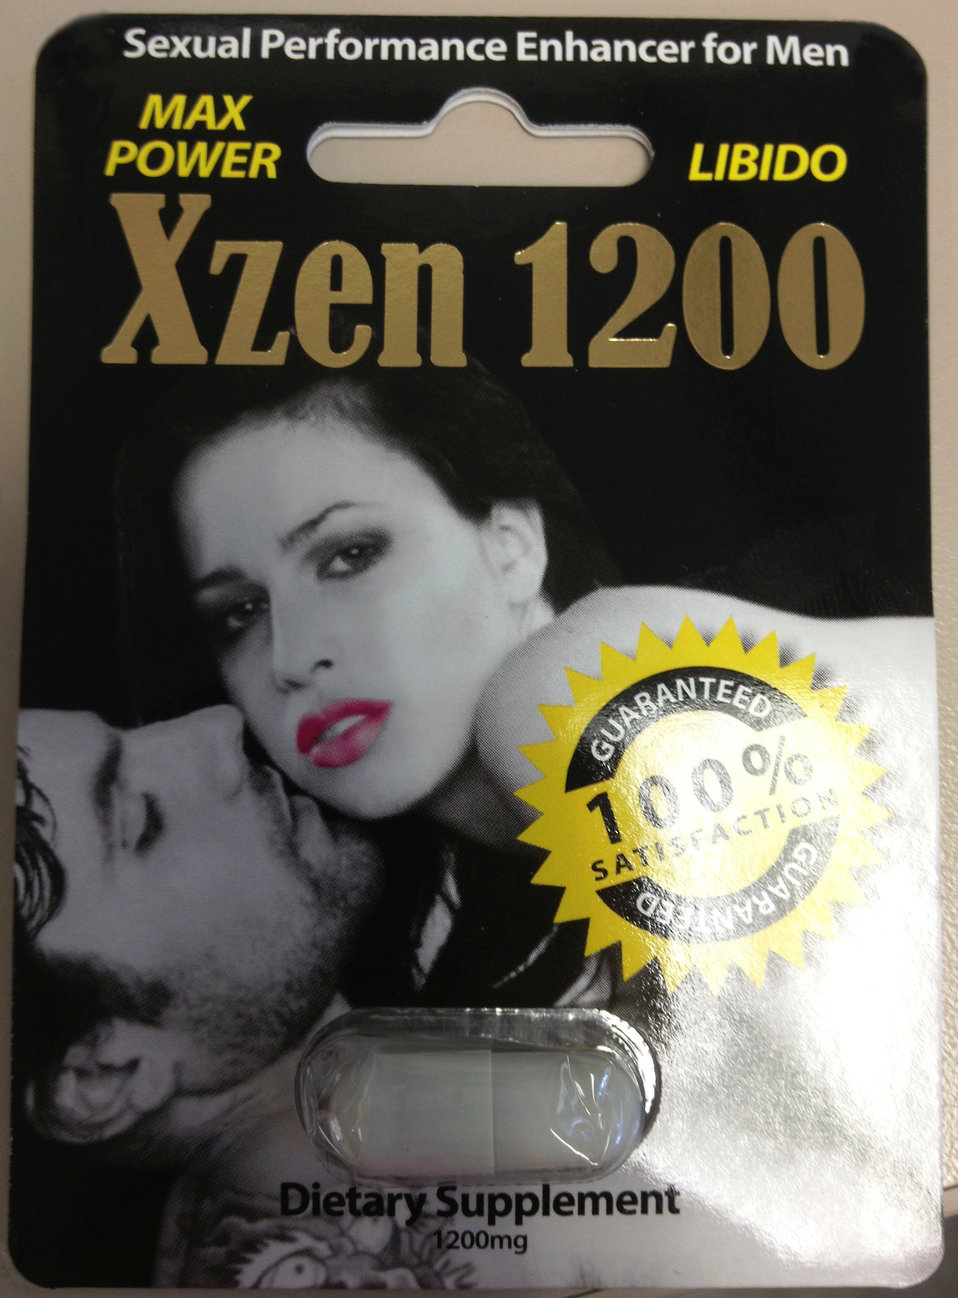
Xzen 1200

September 24, 2013 - The FDA is advising consumers not to purchase or use 'Xzen 1200,' a product promoted and sold for sexual enhancement. The product was found to contain undeclared tadalafil. For more information, go to www.fda.gov/drugs/resourcesforyou/consumers/buyingusingme...

And read this Consumer Update: Beware of Fraudulent ‘Dietary Supplements’